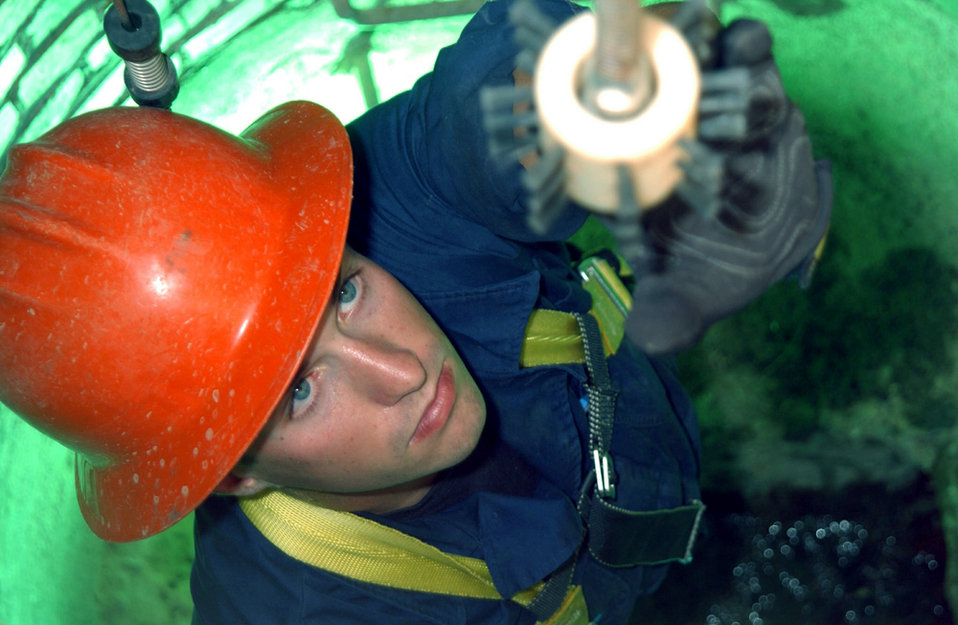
Light in the hole

DAVIS-MONTHAN AIR FORCE BASE, Ariz. - Airman 1st Class Chad Wolfe helps guide a camera into a manhole to troubleshoot a plumbing problem here Aug. 13. This camera will send video to a monitor where plumbers on the outside will be able to determine the problem. Airman Wolfe is a utilities apprentice assigned to the 355th Civil Engineer Squadron.